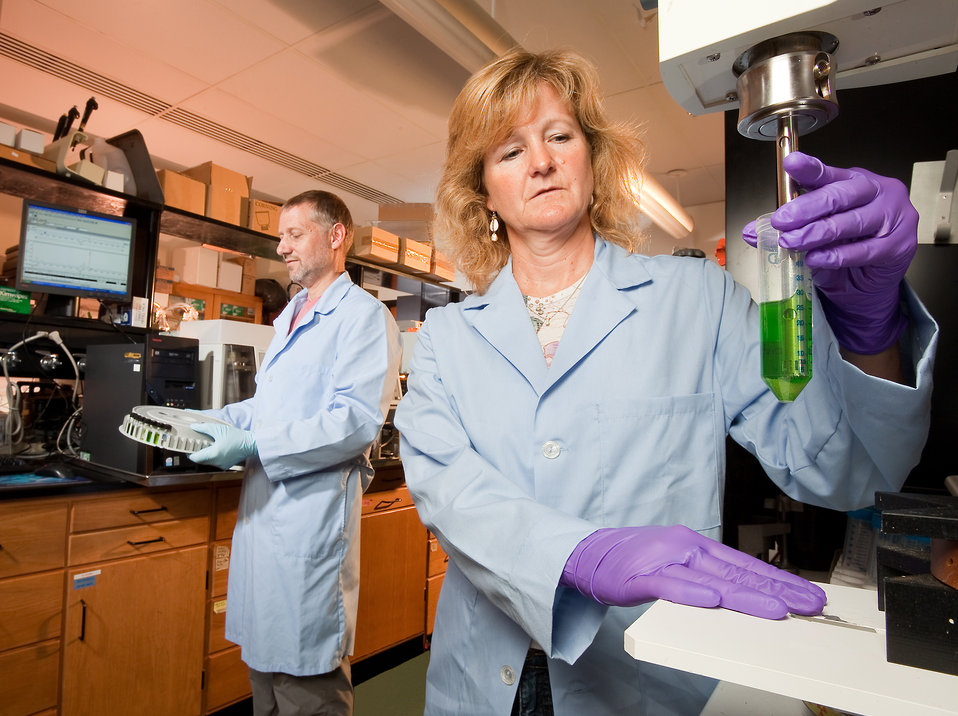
U.S. Department of Agriculture (USDA) Agricultural Research Service (ARS) plant physiologist Franck Dayan uses a High-performance liquid chromatography (HPLC) to analyze plant pigments extracted by support scientist Susan Watson at the ARS Natural Products Utilization Research Unit in Oxford, MS on July 20, 2011.